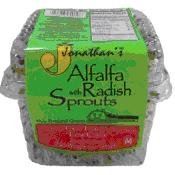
RECALLED - Sprouts

April 19, 2011 - Product Recall - Jonathans Sprouts Recalls Alfalfa Sprouts Because Of Possible Health Risk.